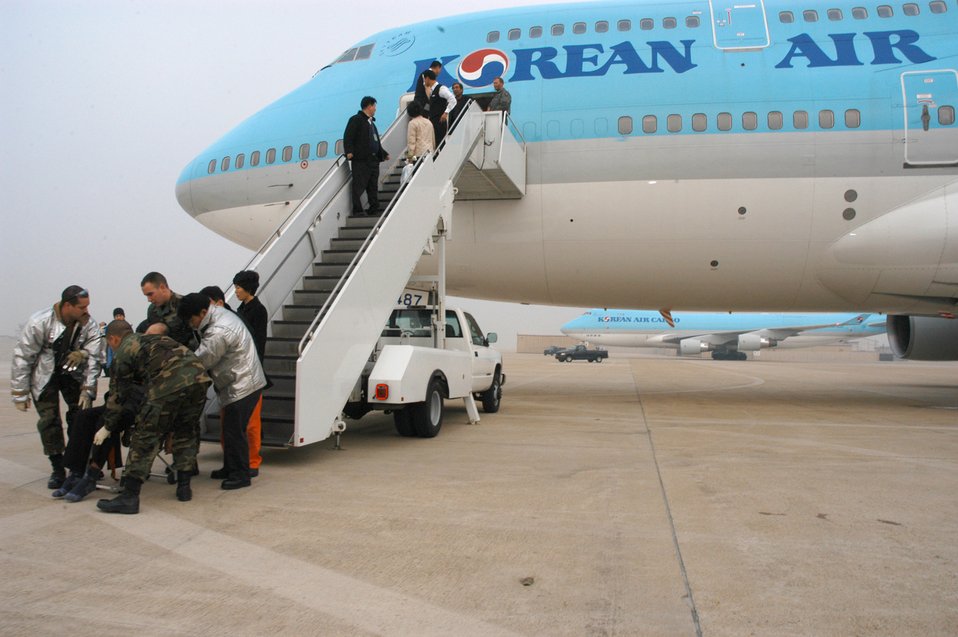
Two Korean Airline jets divert to Kunsan

Medical and security personnel rush a 65-year old Korean man needing medical attention to an ambulance after his Korean Airline flight was diverted to Kunsan from Incheon International Airport. The passenger airliner, with 274 people on board, diverted to Kunsan because of poor weather conditions at Incheon. The Korean man was transported to Kunsan Medical Center in downtown Kunsan City. The passengers were offered bottled water as they waited to take off, and the aircraft was refueled by Air Force personnel.